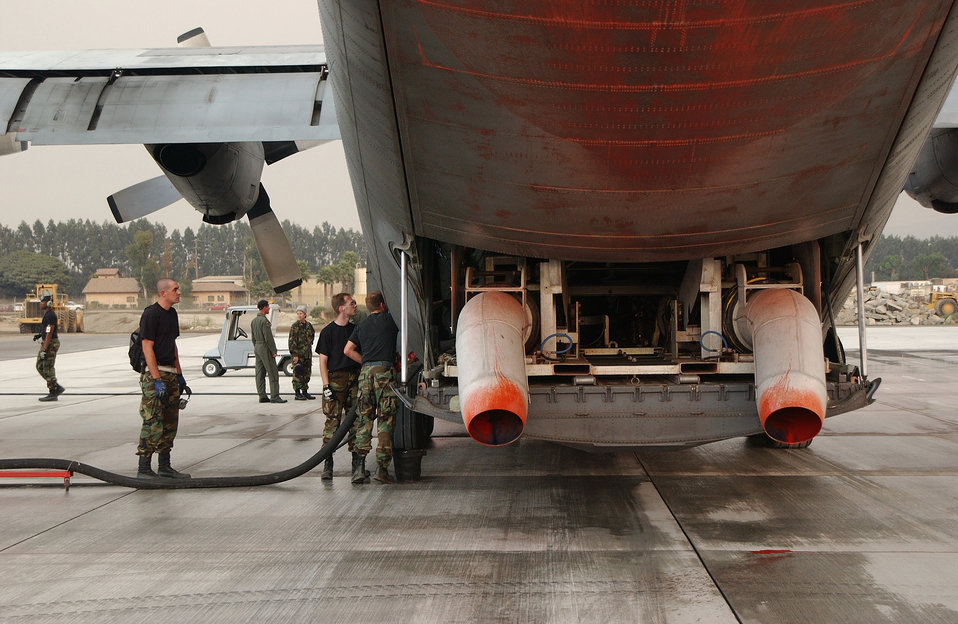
California Fires

CHANNEL ISLANDS AIR NATIONAL GUARD STATION, Calif. -- A Modular Airborne Fire Fighting System equipped C-130E Hercules from the 146th Airlift Wing here is reloaded with Phoschek fire retardant to be dropped on the Simi Fire in Southern California on Oct. 28. Pilots flying eight Air Force C-130 Hercules cargo airplanes have dropped 129,600 gallons of retardant on the Simi fire during 48 sorties and 32 flying hours as of Oct. 29.